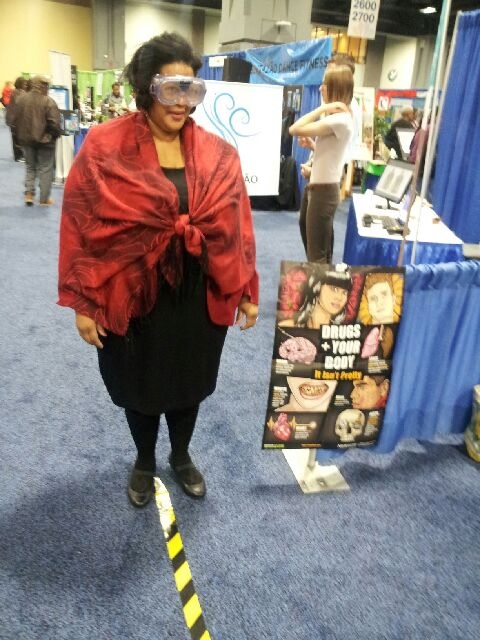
NBC4 Health and Wellness Expo January 11-12, 2014